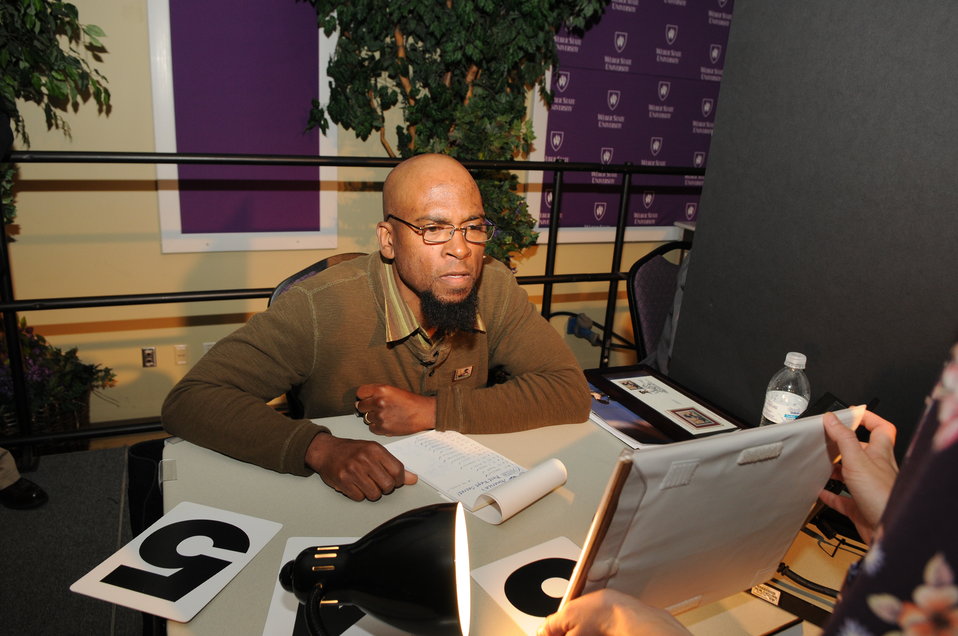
Judging

The U.S. Fish & Wildlife Service sponsored the 2012 Federal Duck Stamp Art Contest September 28 and 29 in Ogden, Utah, at Weber State University. A panel of five judges was responsible for choosing the art work used to design the 2013-2014 Migratory Bird Hunting and Conservation Stamp.